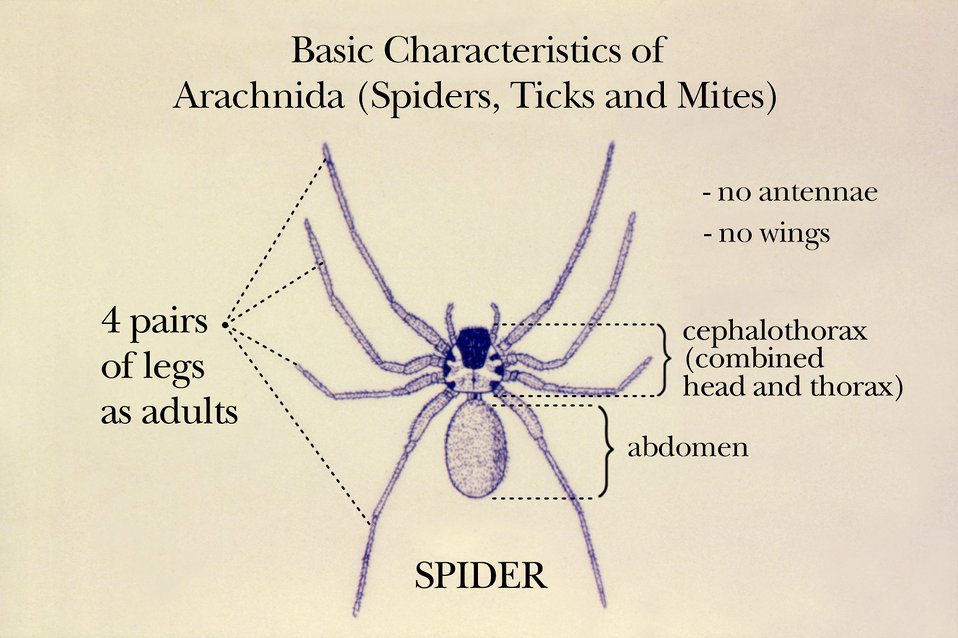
This illustration shows the basic characteristics of the Class Arachnida whose members include spiders, ticks and mites.